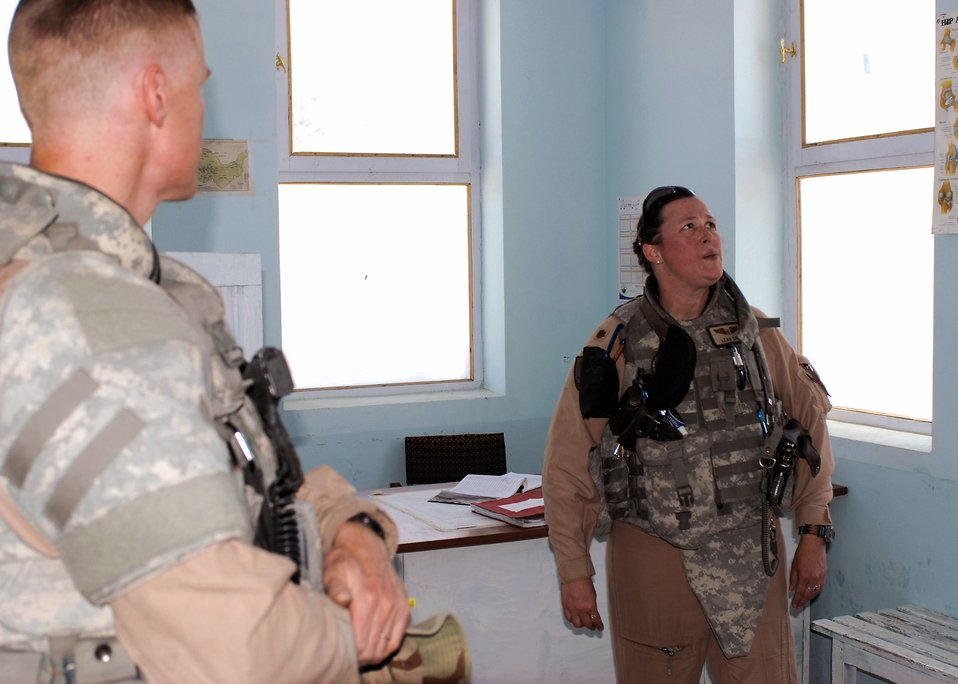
Medical team inspects remote health clinic

Lt. Col. Devin Donnelly (left) and Maj. Lena Soto inspect a treatment room at the Jegdalak Medical Health Centerin Jegdalak, Afghanistan. The inspection team from Combined Security Transition Command-Afghanistan Command Surgeon's office regularly inspect clinics like the Jegdalak Medical Health Center to guarantee their services meet the needs of the Afghan people.